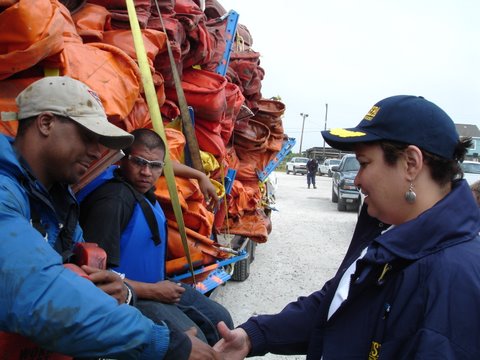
Administrator Lisa Jackson meets workers

May 2, 2010 - EPA Administrator Lisa P. Jackson meets workers along the Gulf Coast while addressing the BP oil spill